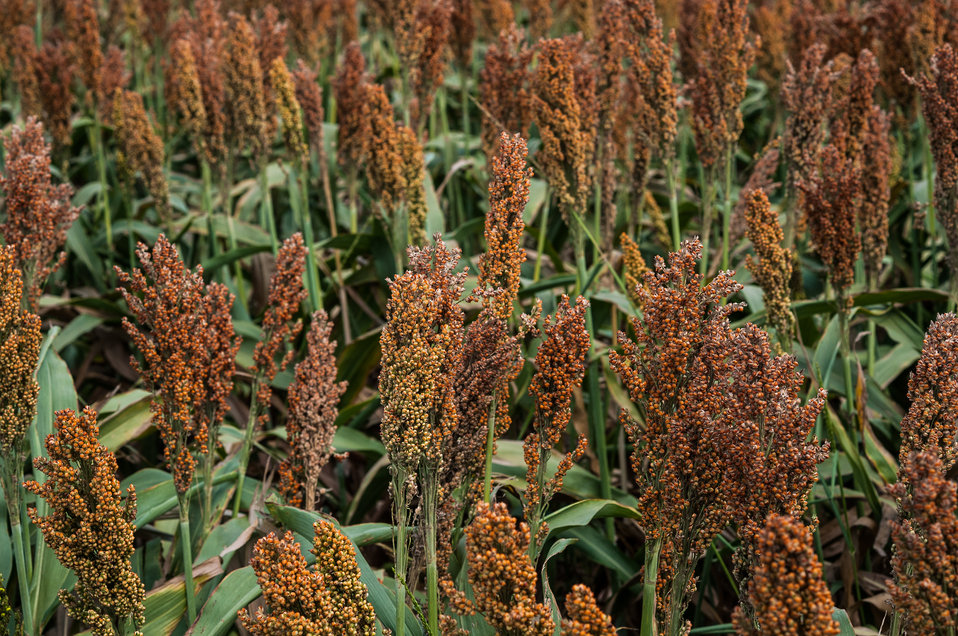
Milo (grain sorghum) grows at Popp Farms 05 (pronounced Pope) in El Campo, TX on Jun. 20, 2013. A 2,400-acre operation also grows cotton and are part of the United Agricultural Cooperative, Incorporated.